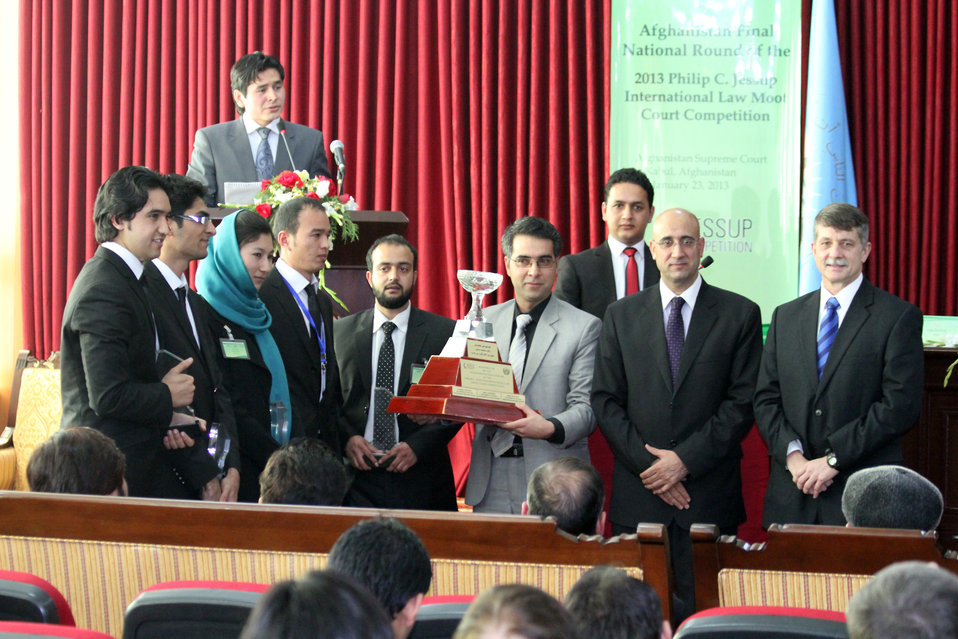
Afghanistan Final National Round of the 2013 Philip C.Jessup International Law Moot Court Competition